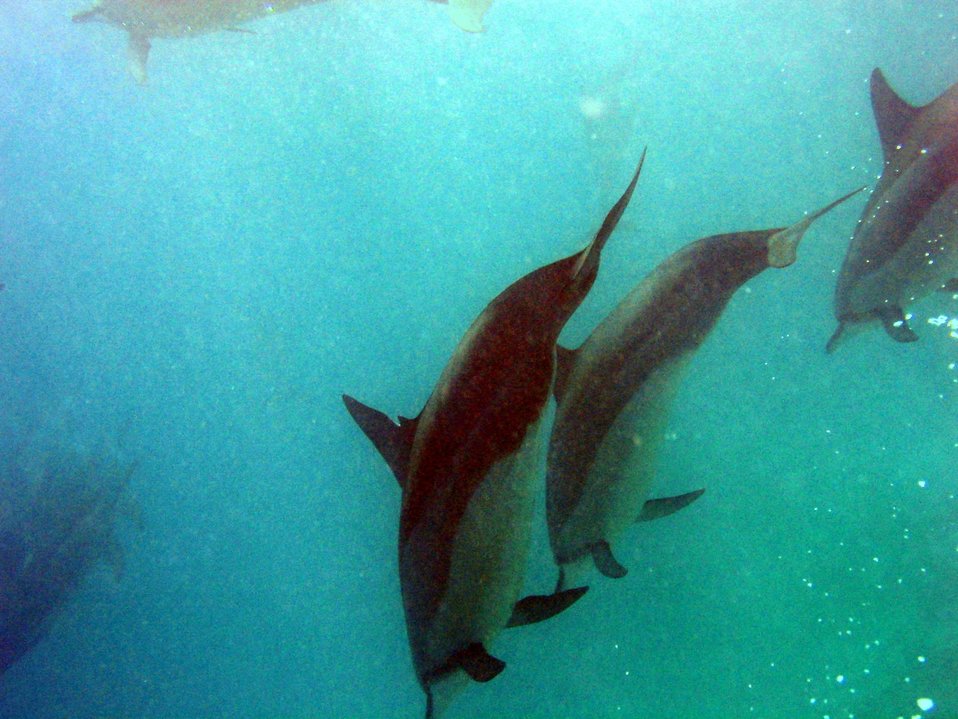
Spinner dolphins (Stenella longirostris) as seen while being towed during debris operations.